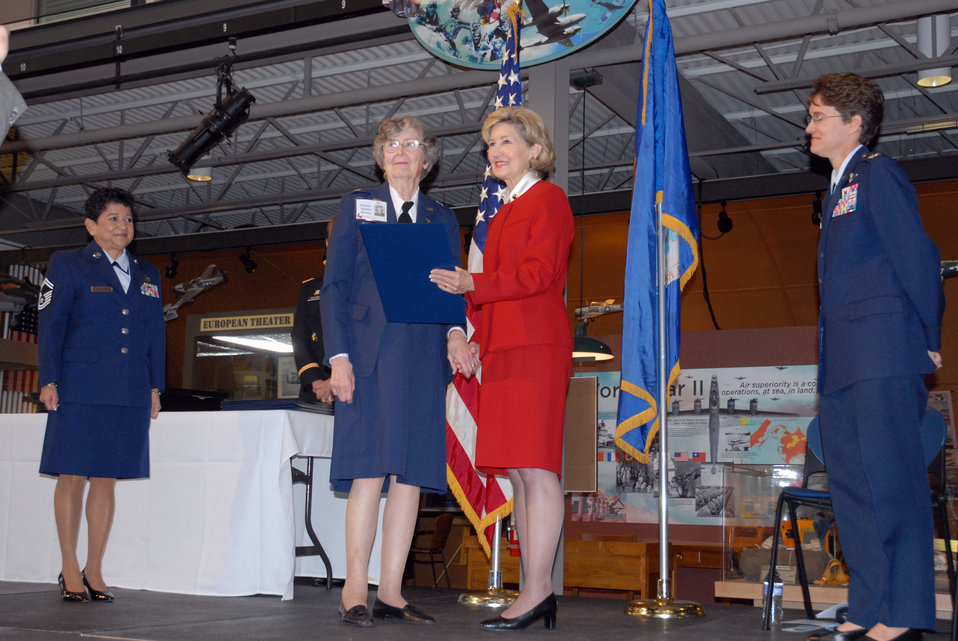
Texas WASP honored by senator

Sen. Kay Bailey Hutchison presents Betty Jo Streff Reed, a former Women Airforce Service Pilot, with a commemorative copy of Bill 111-40, which was passed by Congress to award the WASP a Congressional Gold Medal, the highest honor Congress can bestow a civilian for service to their country, Nov. 11, 2009, in Dallas. Col. Jacqueline Van Ovost, the 12th Flying Training Wing commander and guest speaker, looked on.